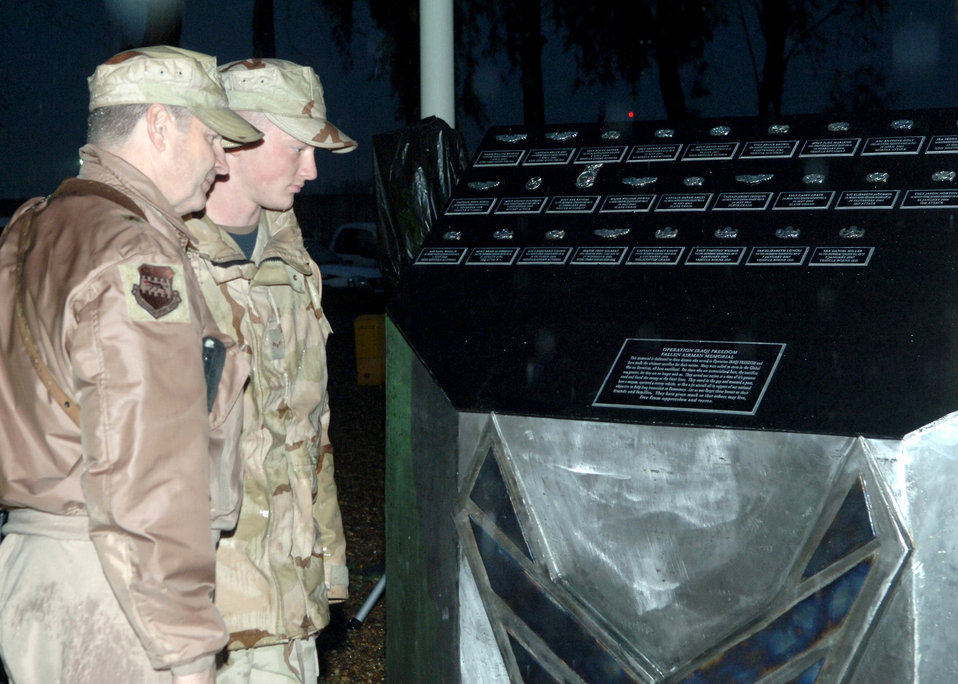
Fallen Airmen memorialized at Balad

Brig. Gen. Robin Rand and Airman 1st Class Neil Ketchem pay their respects at the 332nd AEW's monument to honor fallen Airmen Jan. 12 at Balad Air Base, Iraq. General Rand is the 332nd Air Expeditionary Wing commander, and Airman Ketchem is a 332nd Expeditionary Civil Engineer Squadron structures journeyman deployed from Hill Air Force Base, Utah.